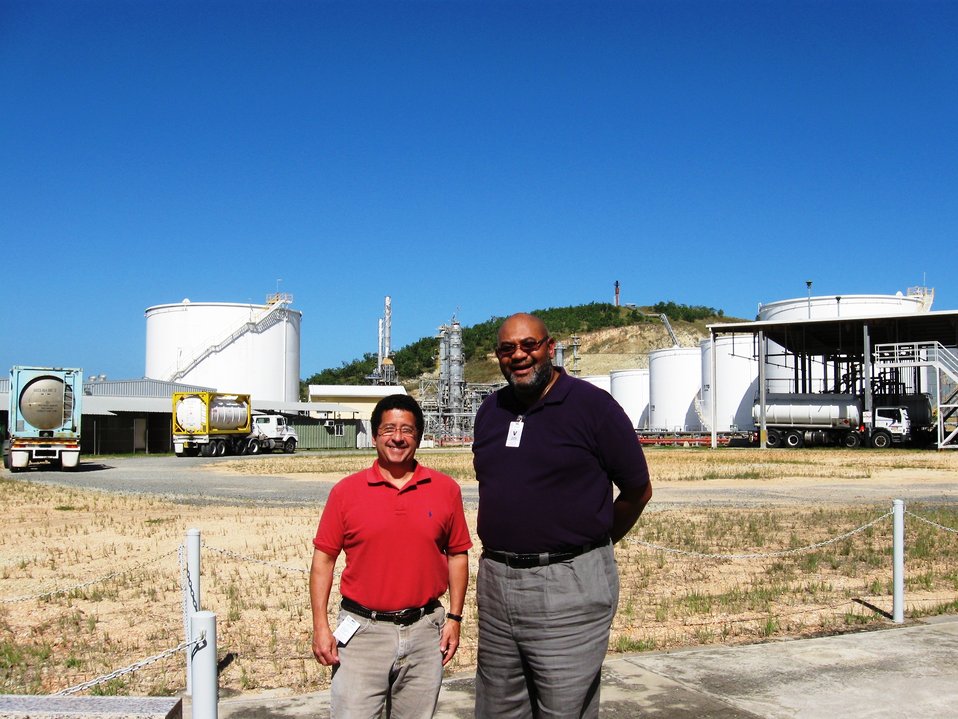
Coordinator for International Energy Affairs David Goldwyn and Ambassador Taylor Pose for a Photo

U.S. Secretary of State Hillary Rodham Clinton’s Coordinator for International Energy Affairs David Goldwyn and U.S. Ambassador to Papua New Guinea, Solomon Islands and Vanuatu Teddy Taylor pose for a photo in front of the Interoil refinery, which lies just across the harbor from downtown Port Moresby, Papua New Guinea, on June 18, 2010.